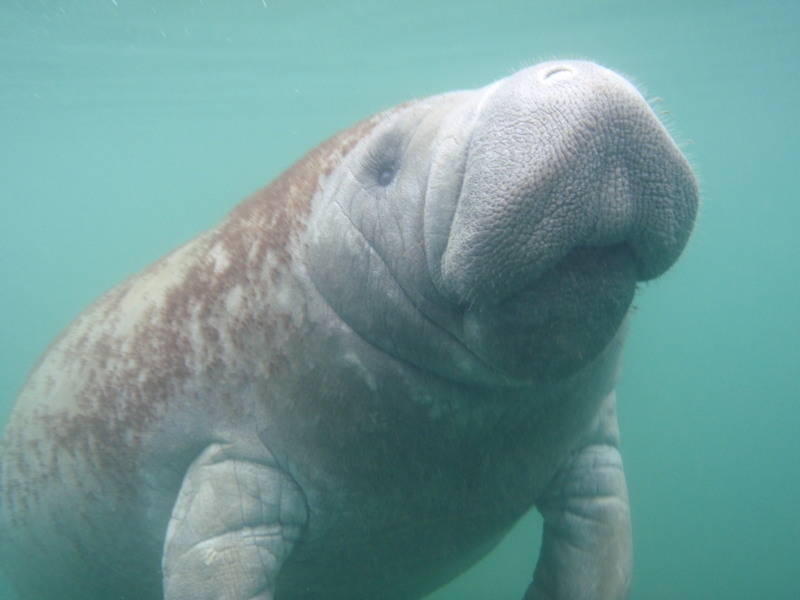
Endangered Florida manatee (Trichechus manatus)

Photo credit: Tracy Colson

The Crystal River National Wildlife Refuge, was established in 1983 specifically for the protection of the endangered West Indian Manatee. This unique refuge preserves the last unspoiled and undeveloped habitat in Kings Bay, which forms the headwaters of the Crystal River. The refuge preserves the warm water spring havens, which provide critical habitat for the manatee populations that migrate here each winter.